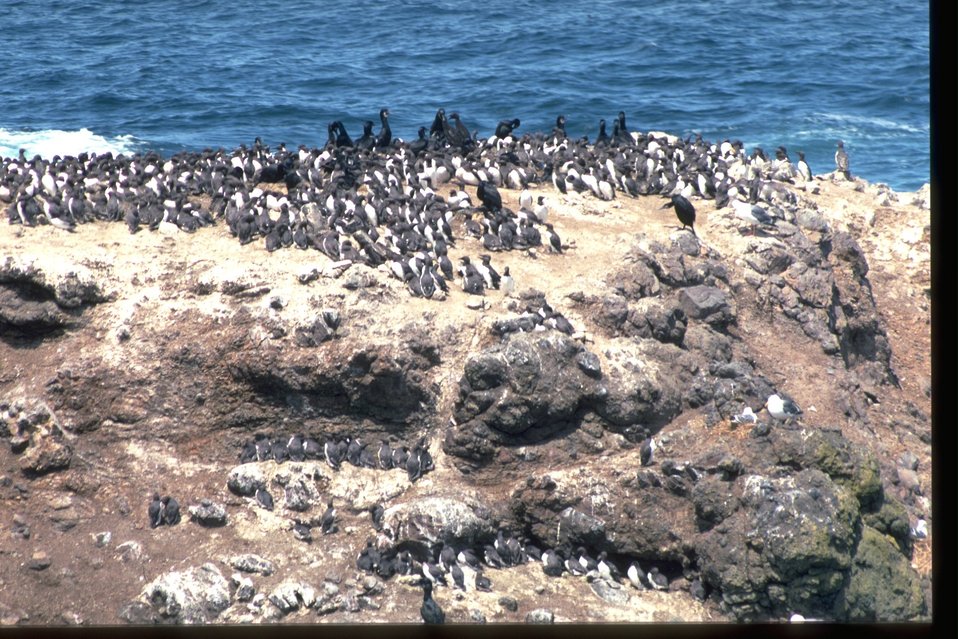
Common Murre colony along the coast.